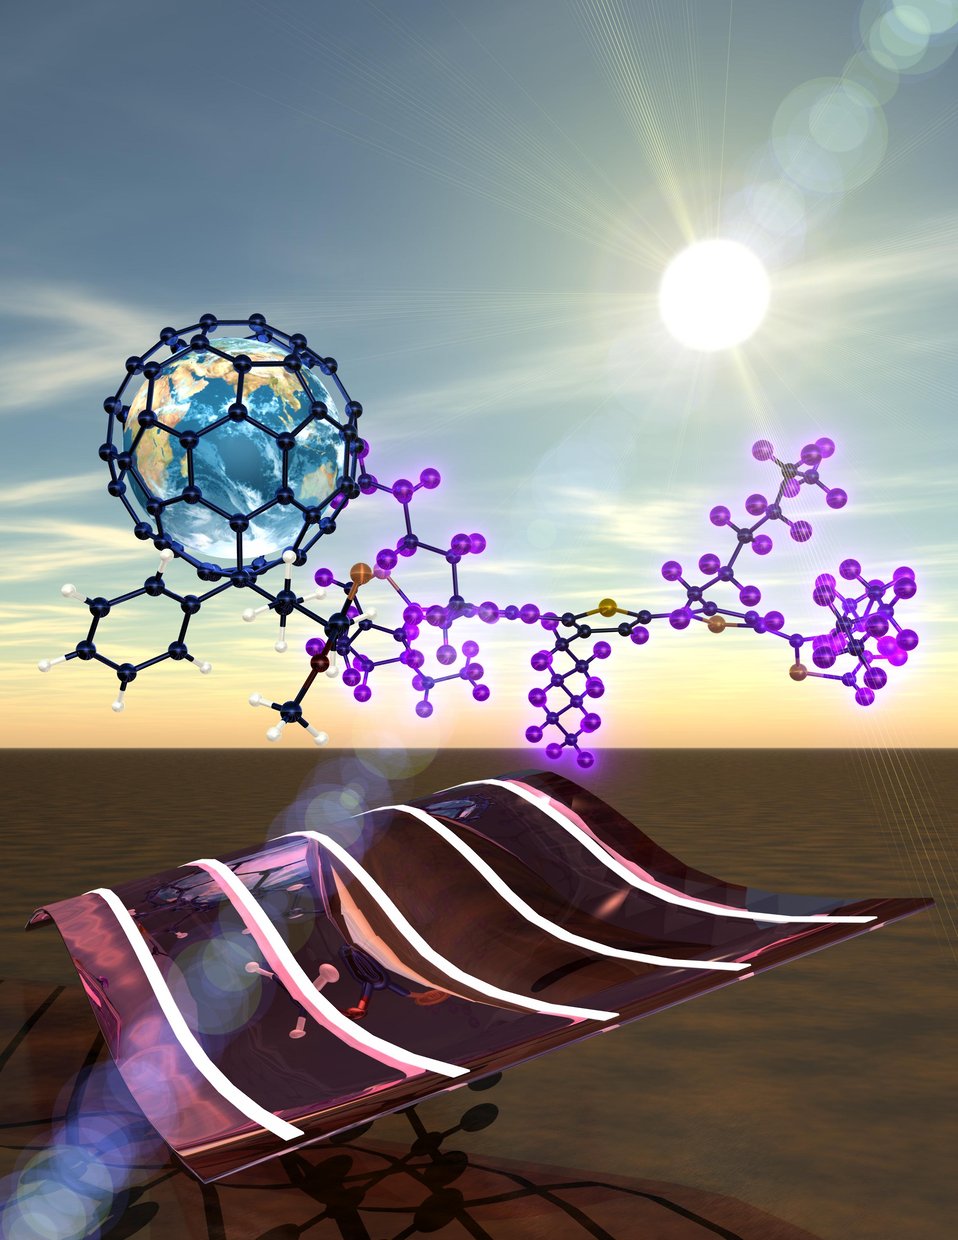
At Oak Ridge National Laboratory, Conceptual drawing shows a flexible organic photovoltaic made from an acceptor of PCBM (buckyball with earth) and the donor of deuterated conducting polymer. The polymer blend in the device (bottom) will harvest the sunlight to generate electrical power. (carbon:blue; sulfur: yellow; hydrogen: white; deuterium: purple).